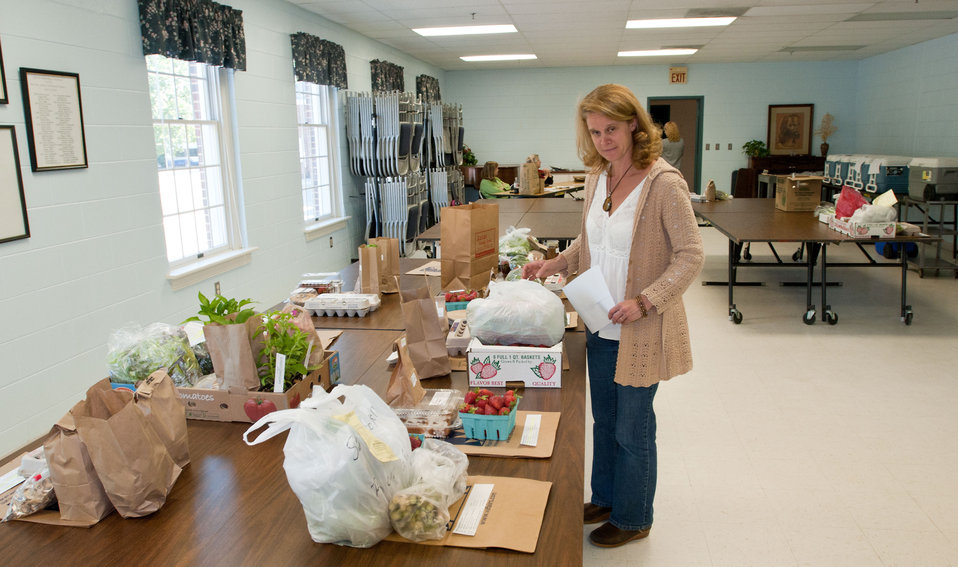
Fall Line Farms owner and founder Molly Harris checks the operation at the Bon Air United Methodist Church pick-up point, in Richmond, VA, on Thursday, May 5, 2011. This is one of several pick-up points in the Richmond, VA area. This local food hub offers a wide variety of household food staples and specialty items. The difference from traditional co-ops is that members can pick their customized orders from an ever changing inventory of fruits, vegetables, meats, soaps, eggs, cheeses, flowers, honey, pastas, sauces, syrups, baked goods, mushrooms, flour and grains. Suppliers post what they have on a Lulus Local Food online listing and customers can make their selection. Every Thursday suppliers deliver orders to, one of several pick-up points, designated by the customers in or around the Richmond area.